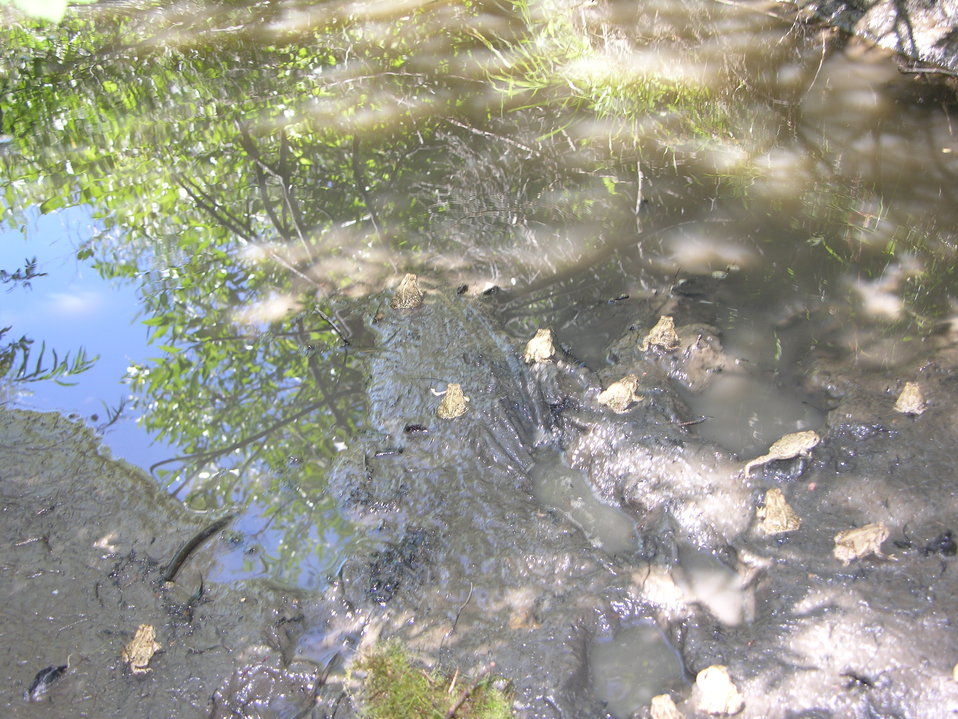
Releasing Wyoming Toads

Home sweet home for the Wyoming Toad.